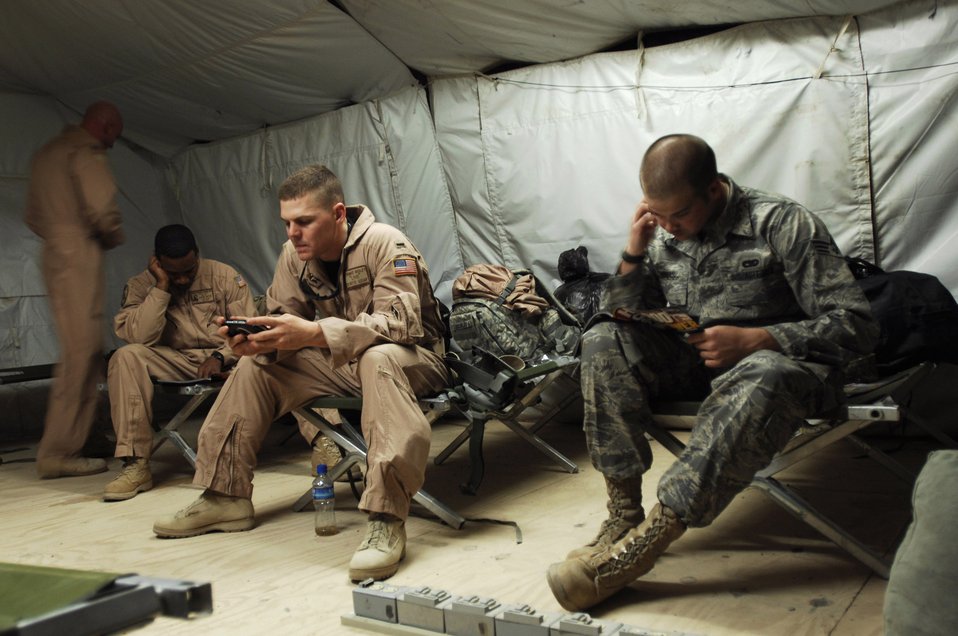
Combat truckers haul cargo through dangerous roads

Airmen from the 586th Expeditionary Logistics Readiness Squadron, 70th Medium Truck Detachment rest and relax before starting the next leg of a recent convoy from an Army camp in Southwest Asia. The Airmen of the 70th and 424th MTDs assigned to the 586th ELRS are in-lieu-of forces supporting the Army support line-haul convoy movements in and out of Iraq.